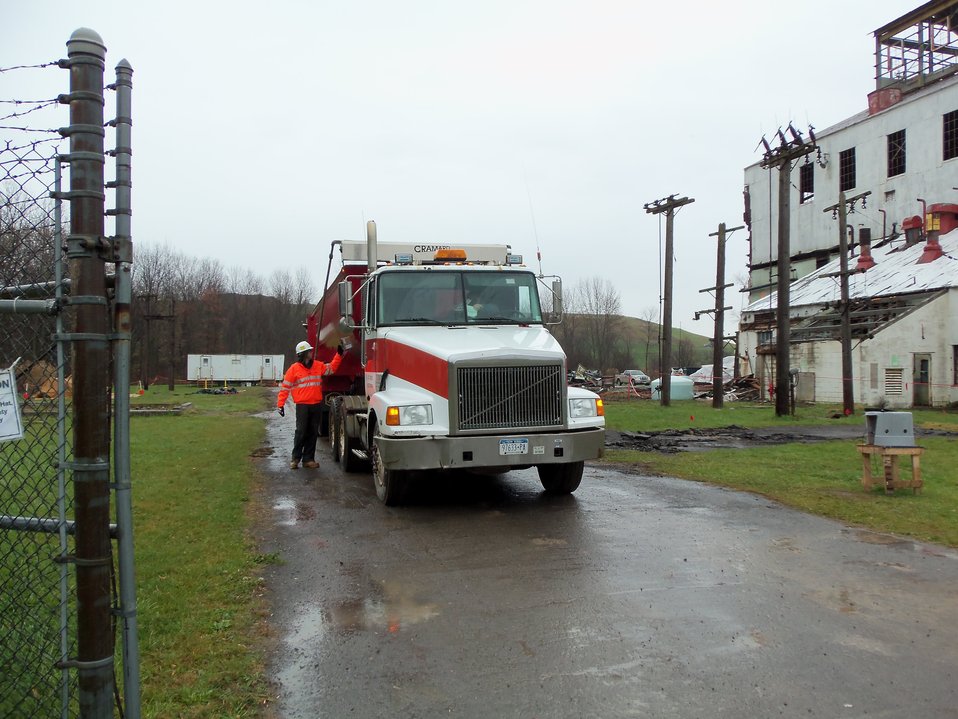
TRUCK LEAVING SITE

Activities from the Niagara Falls Storage Site, which is associated with the former Lake Ontario Ordnance Works. Formerly Utilized Sites Remedial Action Program (FUSRAP), a program initiated in 1974 to identify, investigate and clean up or control sites that were part of the Nation's early atomic energy and weapons program. Activities at the sites that are eligible for FUSRAP were conducted by Manhattan Engineer District (MED) or the Atomic Energy Commission (AEC), both predecessors of the Department of Energy (DOE). The U.S. Army Corps of Engineers was assigned management of FUSRAP by Congress in 1997.